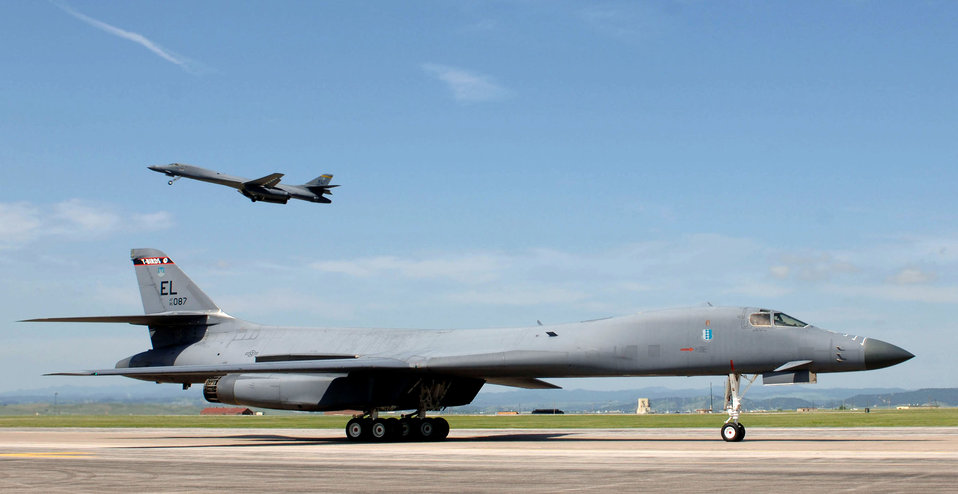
Lancers

A B-1 Lancer taxis while another one takes off from Ellsworth Air Force Base, S.D., on Thursday, June 8. The aircraft are assigned to the 28th Bomb Wing.